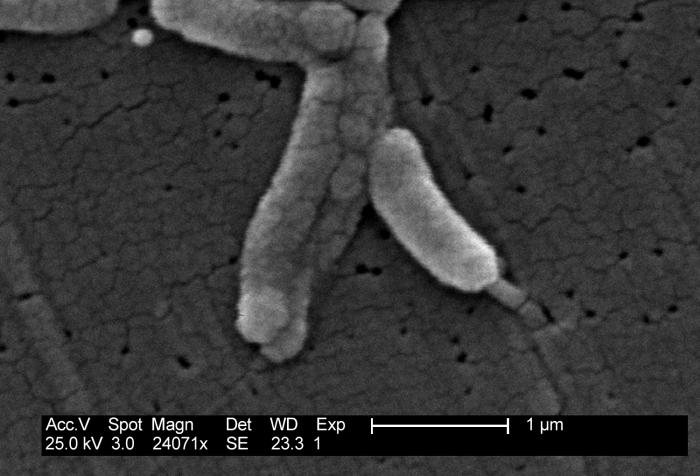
This scanning electron micrograph depicts a number of Gram-negative Flexispira rappini bacteria, magnified 24,071x.